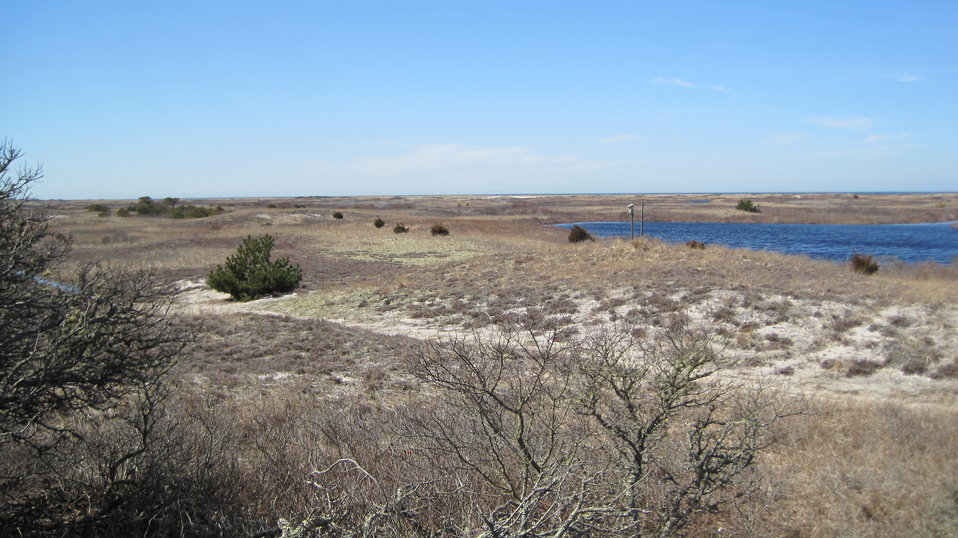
South Monomoy Island

View from the front porch of the light keeper's house.

Credit: Keith Shannon/USFWS

Monomoy National Wildlife Refuge is part of the Eastern Massachusetts National Wildlife Refuge Complex.